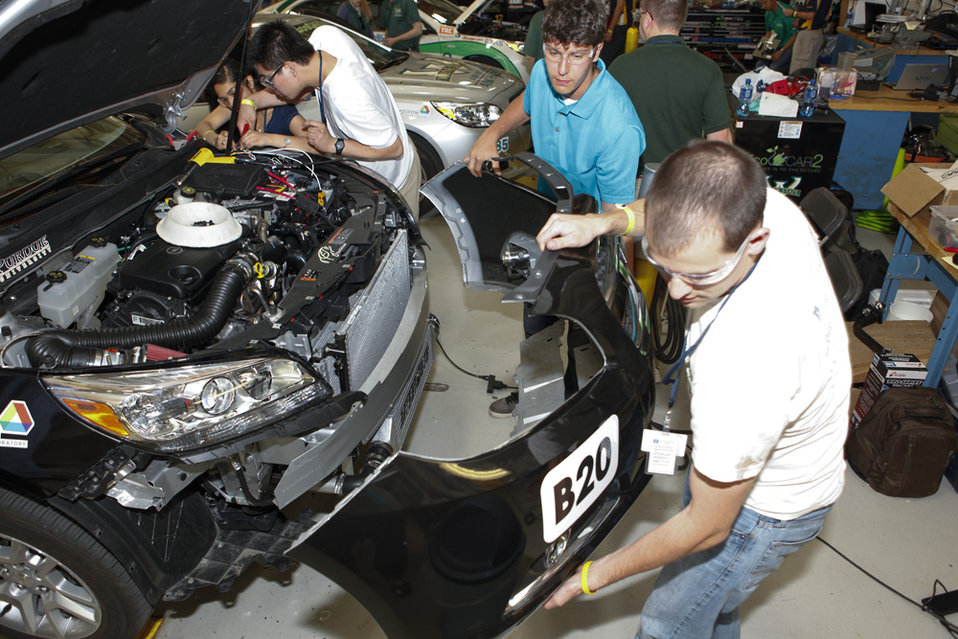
Students from Purdue University work on their vehicle, making last-minute adjustments before a day of tests. The team’s vehicle can run in electric-only mode or use a diesel engine that operates on B20 (20 percent biodiesel blend). Team members reattach the front bumper of their car after making adjustments. | Photo courtesy of EcoCAR 2.